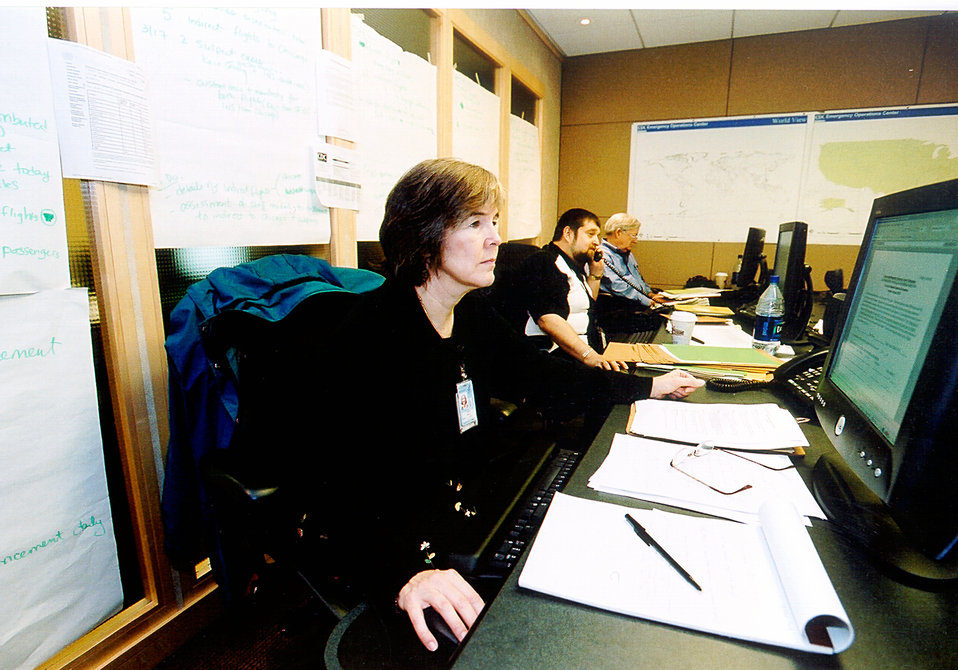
This image shows (L-R) Ava Navin, Tony Drew and John Bateman inside the CDC's new Emergency Operations Center (EOC).